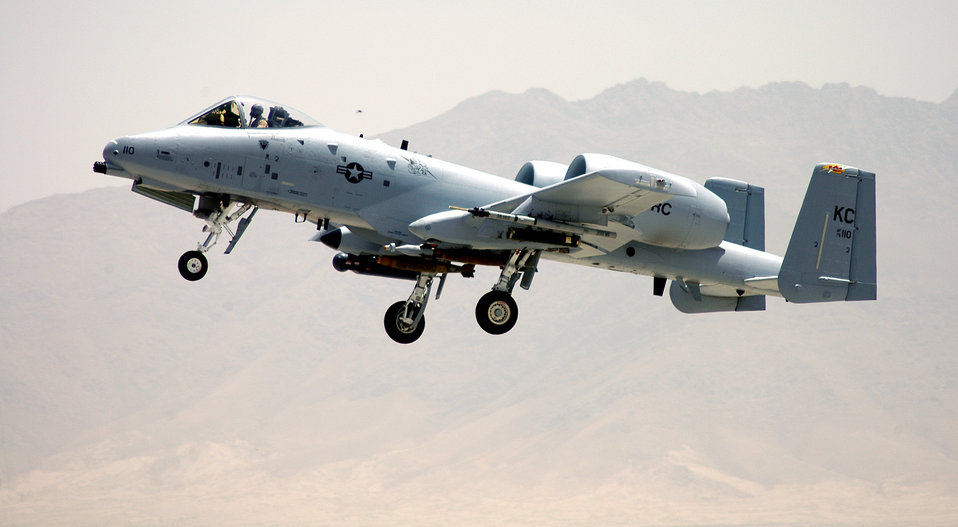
Combat mission

An A-10 Thunderbolt II takes off from Bagram Air Base, Afghanistan, on a combat mission on Tuesday, May 23, 2006. The A-10 is deployed from the Air Force Reserve Command's 442nd Fighter Wing at Whiteman Air Force Base, Mo., in support of Operation Enduring Freedom.